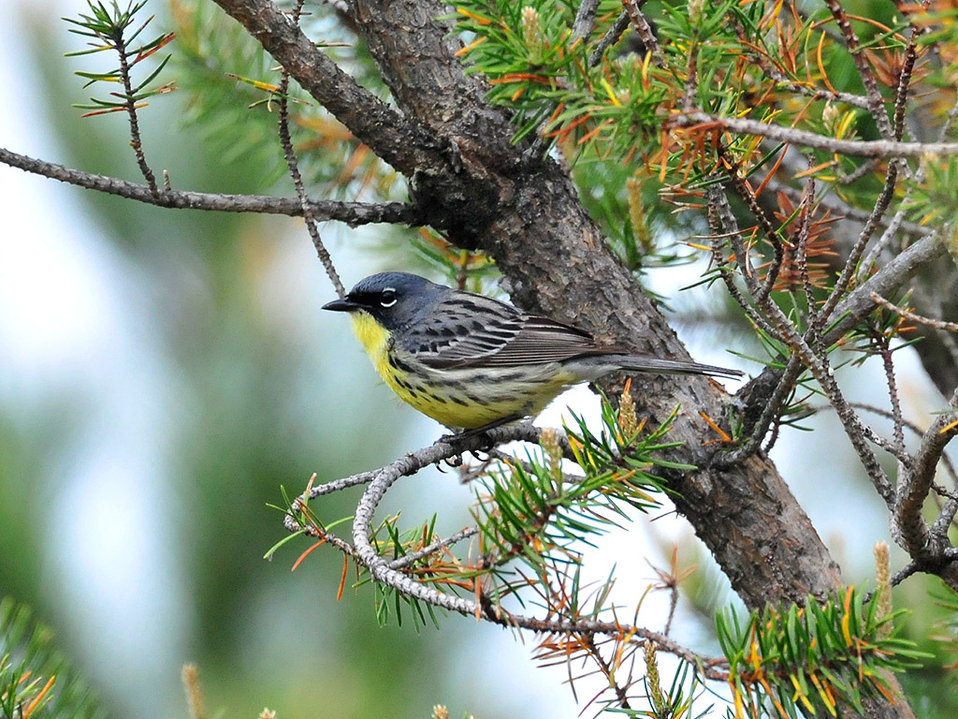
Endangered Kirtland's warbler (Dendroica kirtlandii)

Learn about the historical importance of fire in managing healthy jack pine forests in Michigan, which the endangered Kirtland’s warbler depends: www.fws.gov/endangered/news/episodes/bu-10-2011/kirtlands...